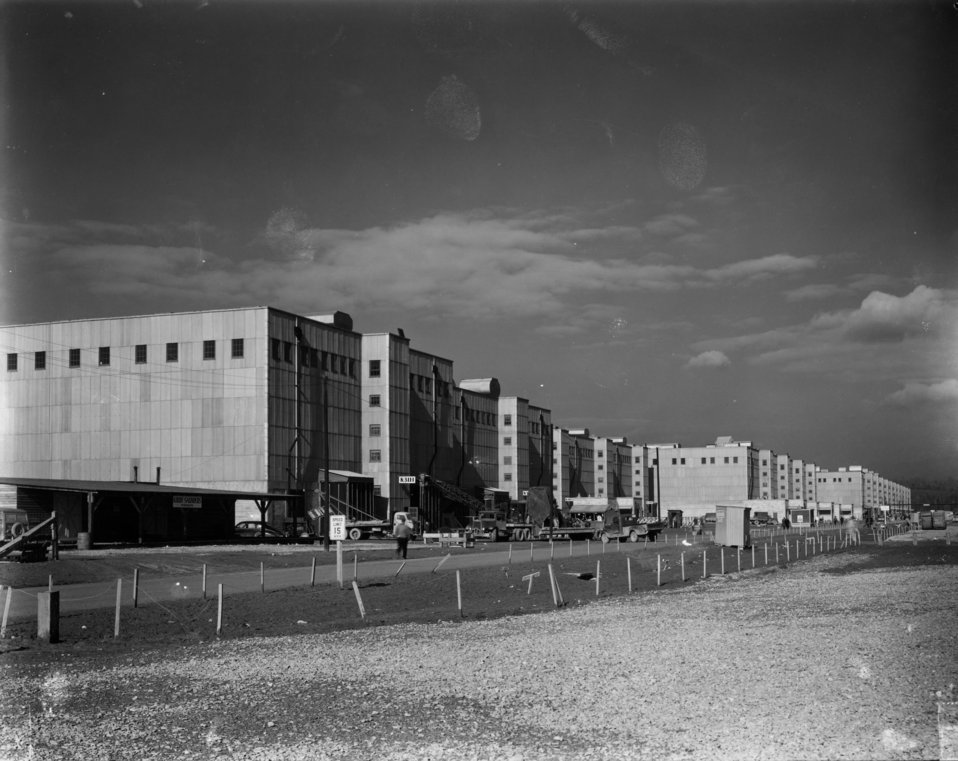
K-25 at Oak Ridge